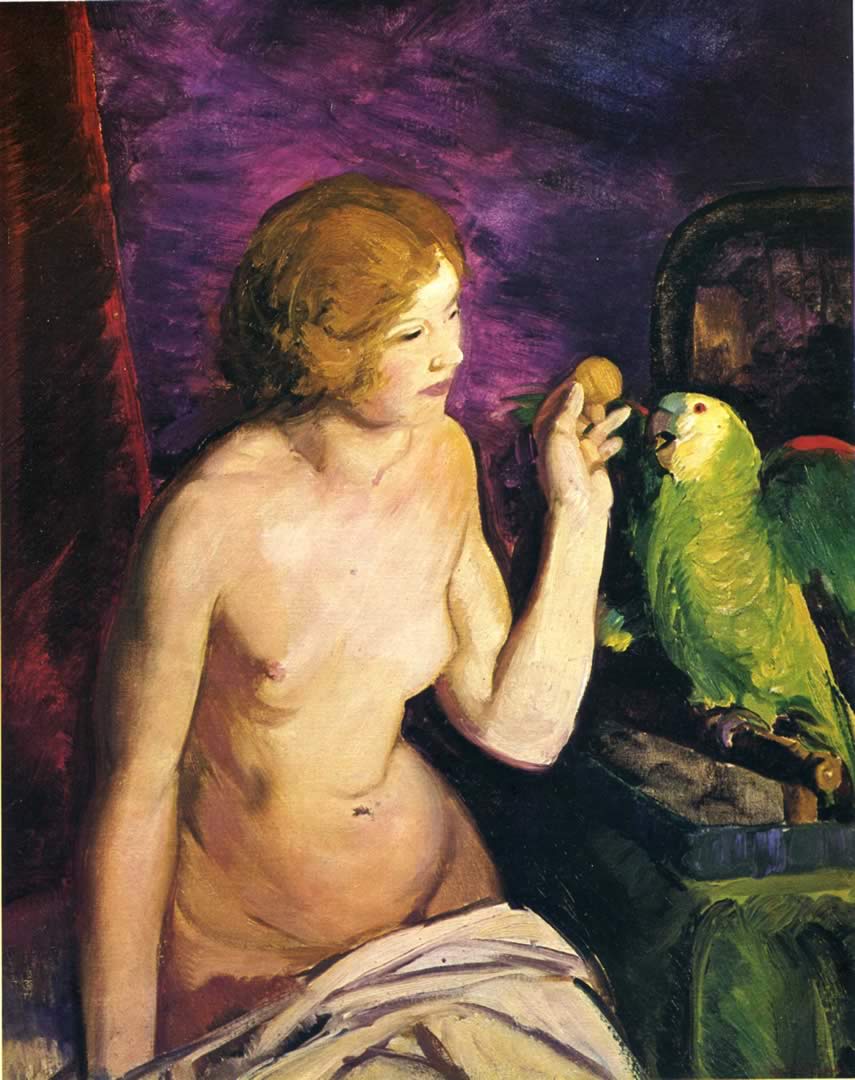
George Bellows - nude-girl-and-parrot